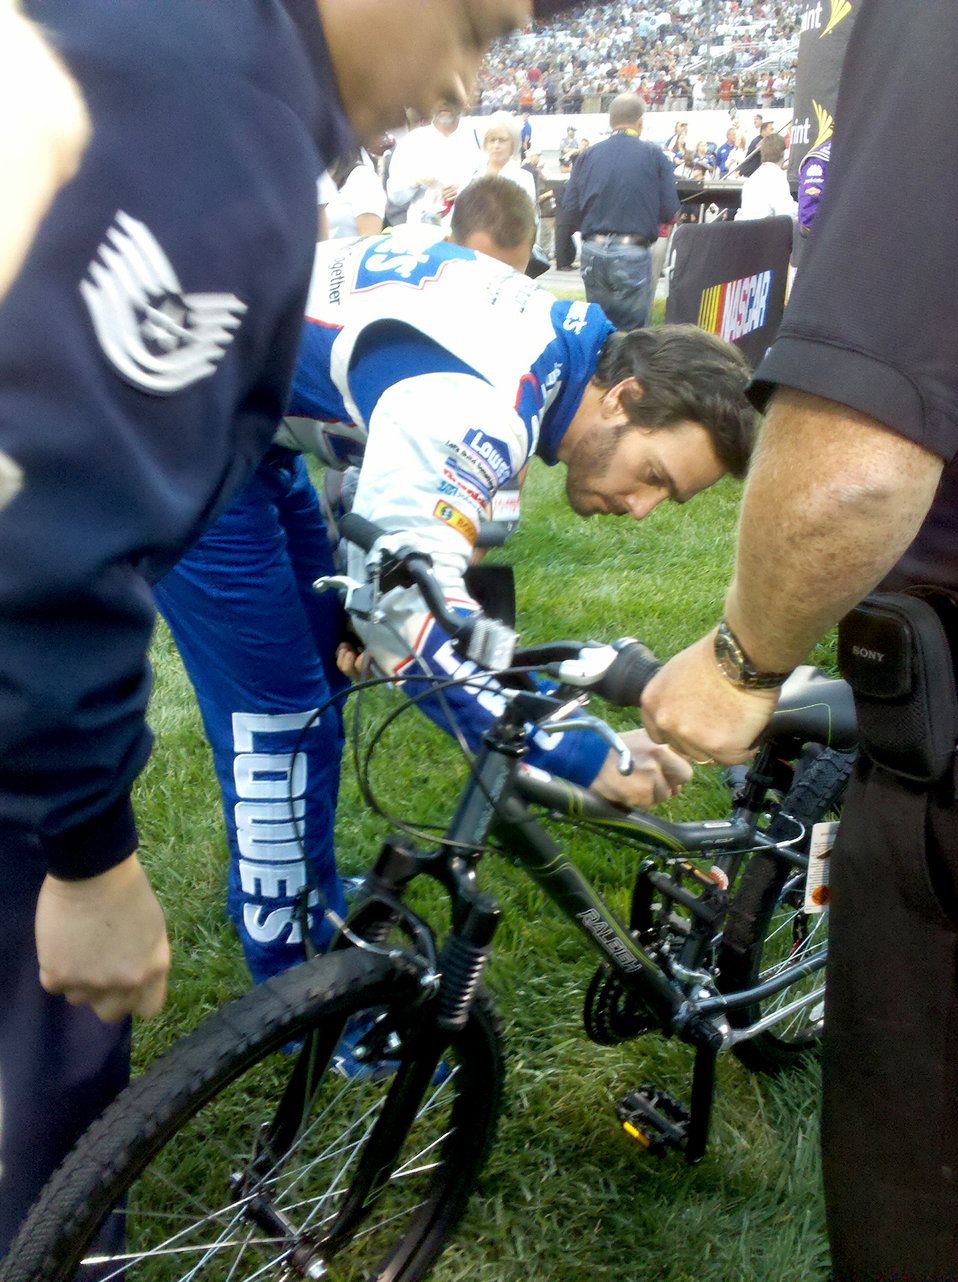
Dover Airman gives boy bike, hope

NASCAR driver Jimmy Johnson signs a bicycle for L.J., a boy who has contracted a rare form of leukemia, Sept. 11, 2010, in Richmond, Va. Through the efforts of Tech. Sgt. Michael Meinhold and Frank Russo of Dover Air Force Base, Del., L.J. will receive the bike, also signed by NASCAR driver Danny Hamlin, to replace one that was stolen from him.